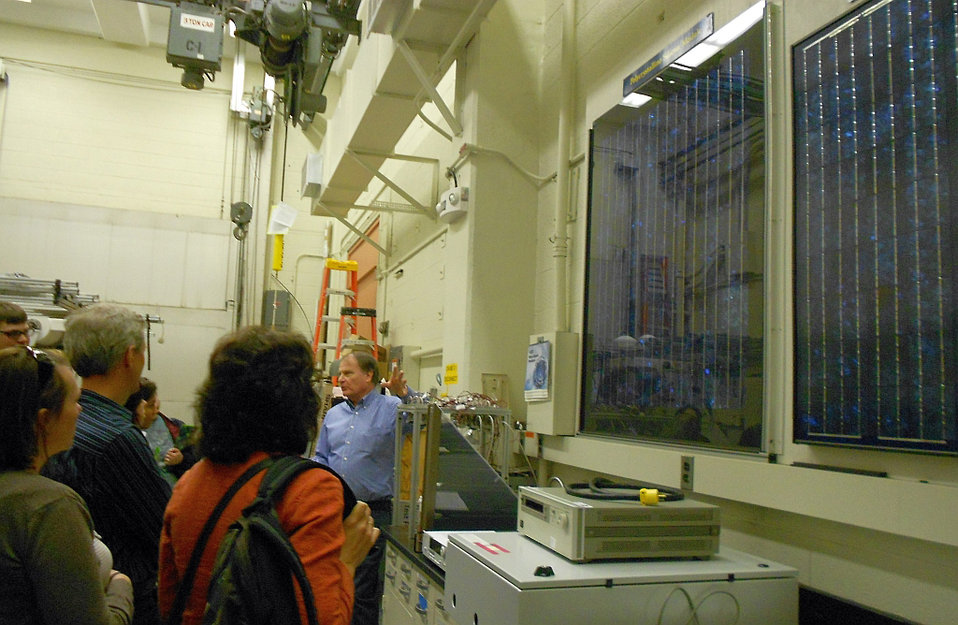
Rochester Community and Technical College Tour

Dr. Hunter Fanny (center), Chief of the Energy and Environment Division at NIST’s Engineering Laboratory discusses the integration of innovations in solar technology into new construction with students and faculty from Rochester Community and Technical College in Rochester, MN.
The Building Environment Division has undertaken multiple-year projects to reduce measurement uncertainty associated with photovoltaic module ratings.